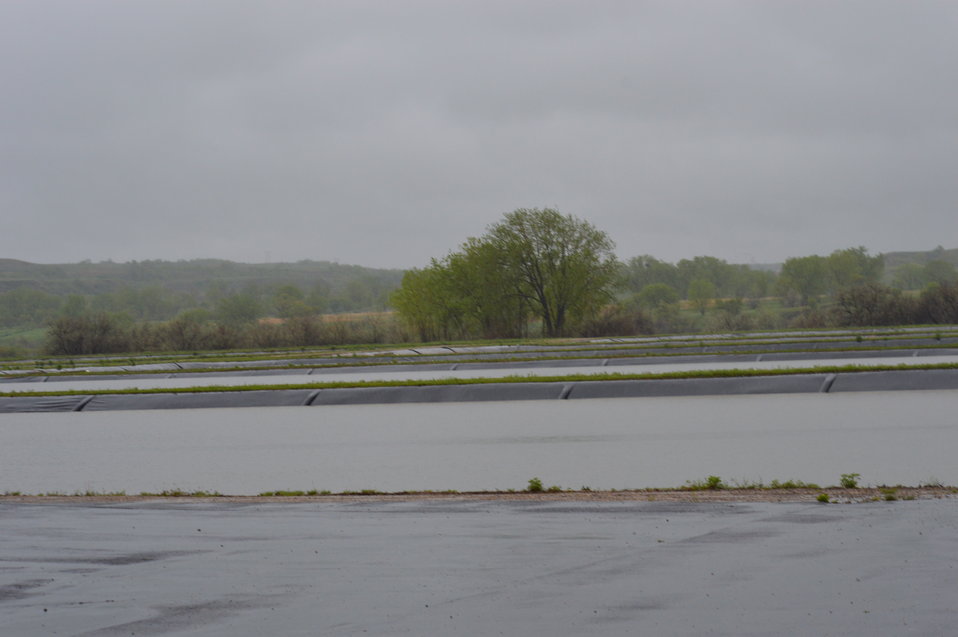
Hatching ponds

Garrison Dam National Fish Hatchery in North Dakota.